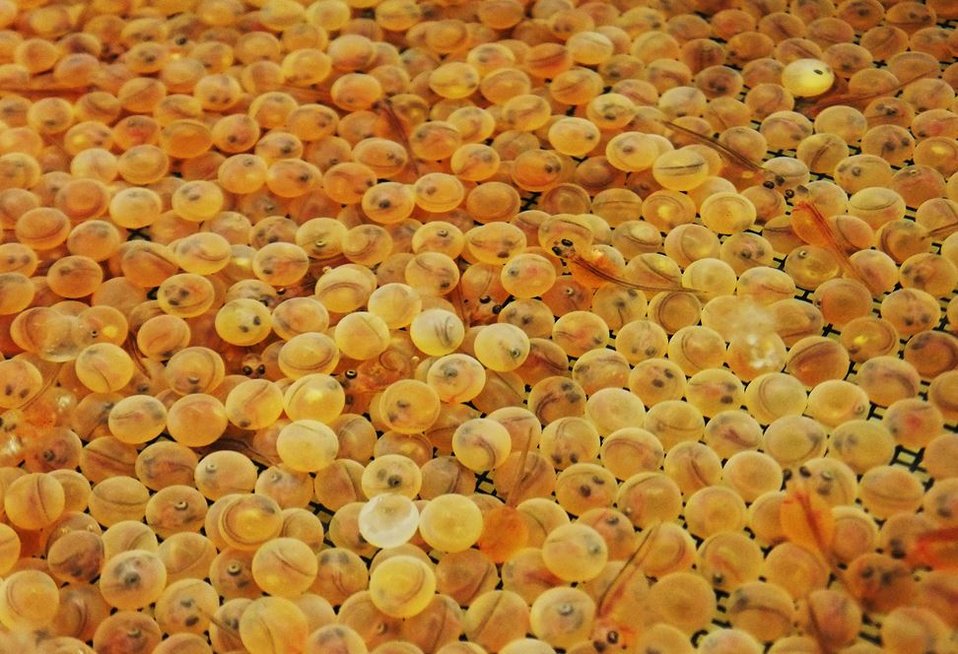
Lake Trout Eggs

Glimpse of lake trout eggs nestled in an incubating tray at Pendills Creek National Fish Hatchery, approximately 50 days old.